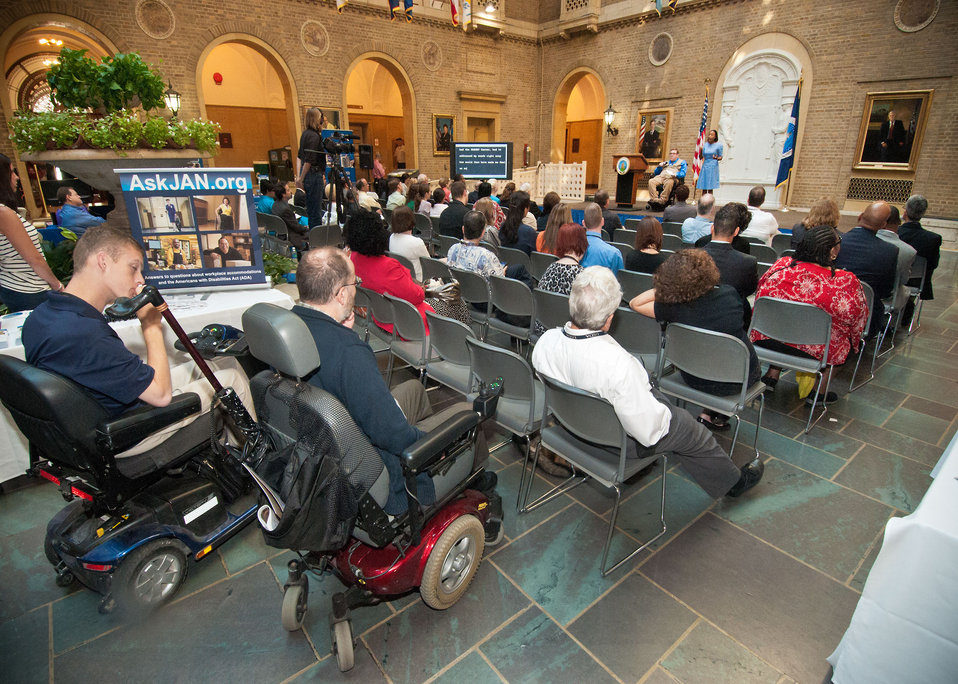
Founder of Federal Employees with Disabilities (FEDS) Jason Olsen speaks at the U.S. Department of Agriculture (USDA) Departmental Management (DM) Target Center 20th Anniversary at USDA in Washington, D.C. on Thursday, Sept. 13, 2012. FEDs is a not-for-profit organization dedicated to ensuring that the rights, privileges, benefits and opportunities for individuals employed by the Federal government are equal to those of their Federal sector peers. The USDA Target Center has provides Assistive Technology to employees with disabilities. The Center has assisted thousands of individuals with disabilities to further contribute to the mission of USDA.